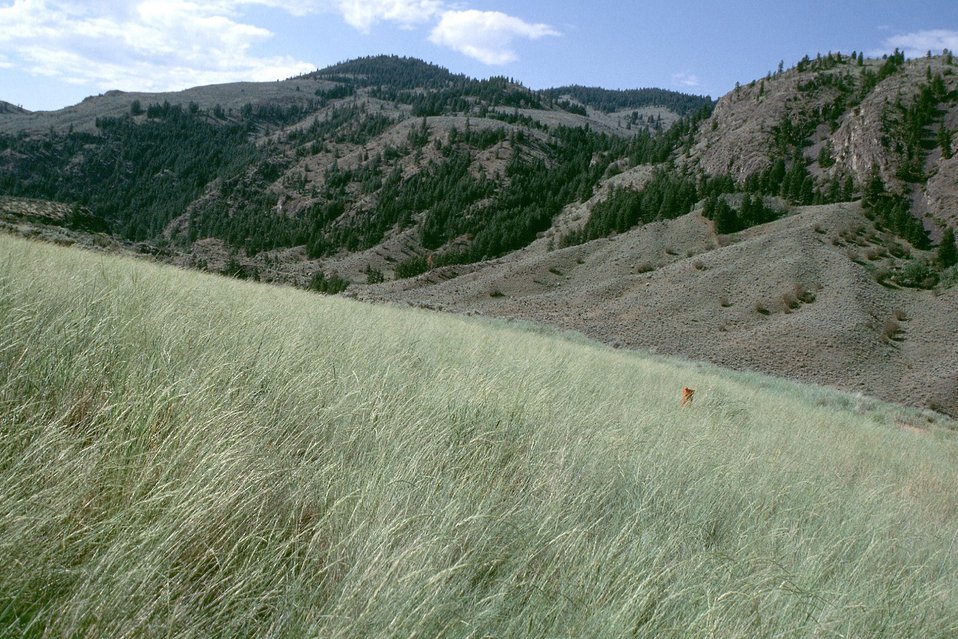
Landfill Rehab, Orville, Washington.